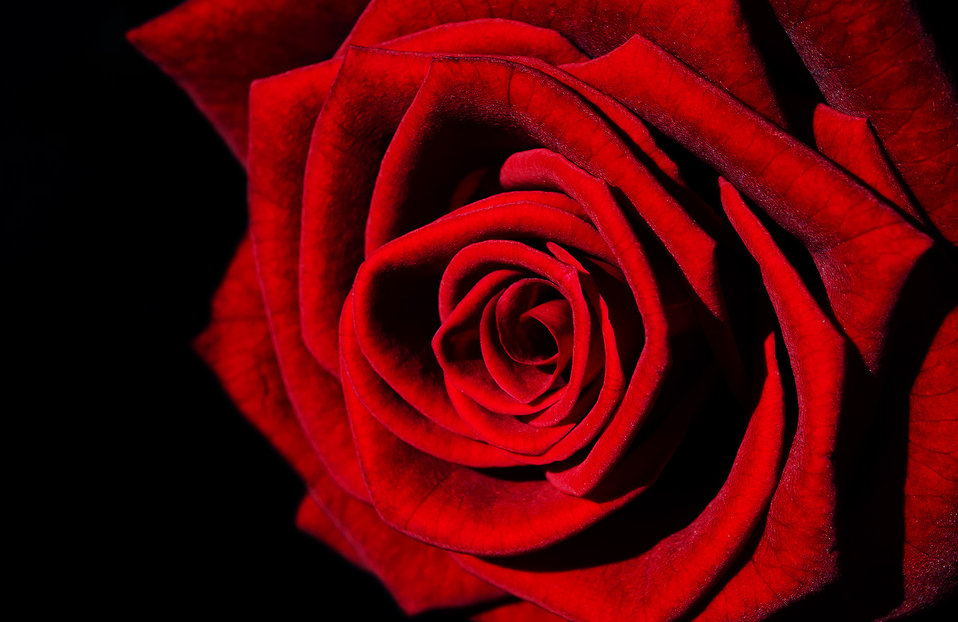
Red rose - background.